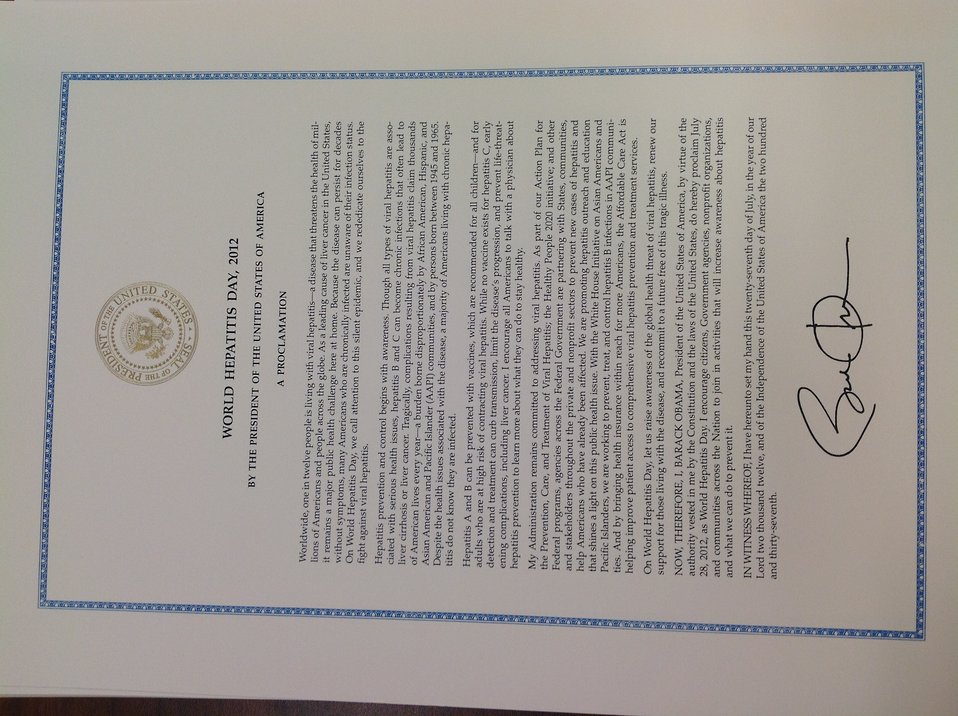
Proclamation for WHD

World Hepatitis Day WH event